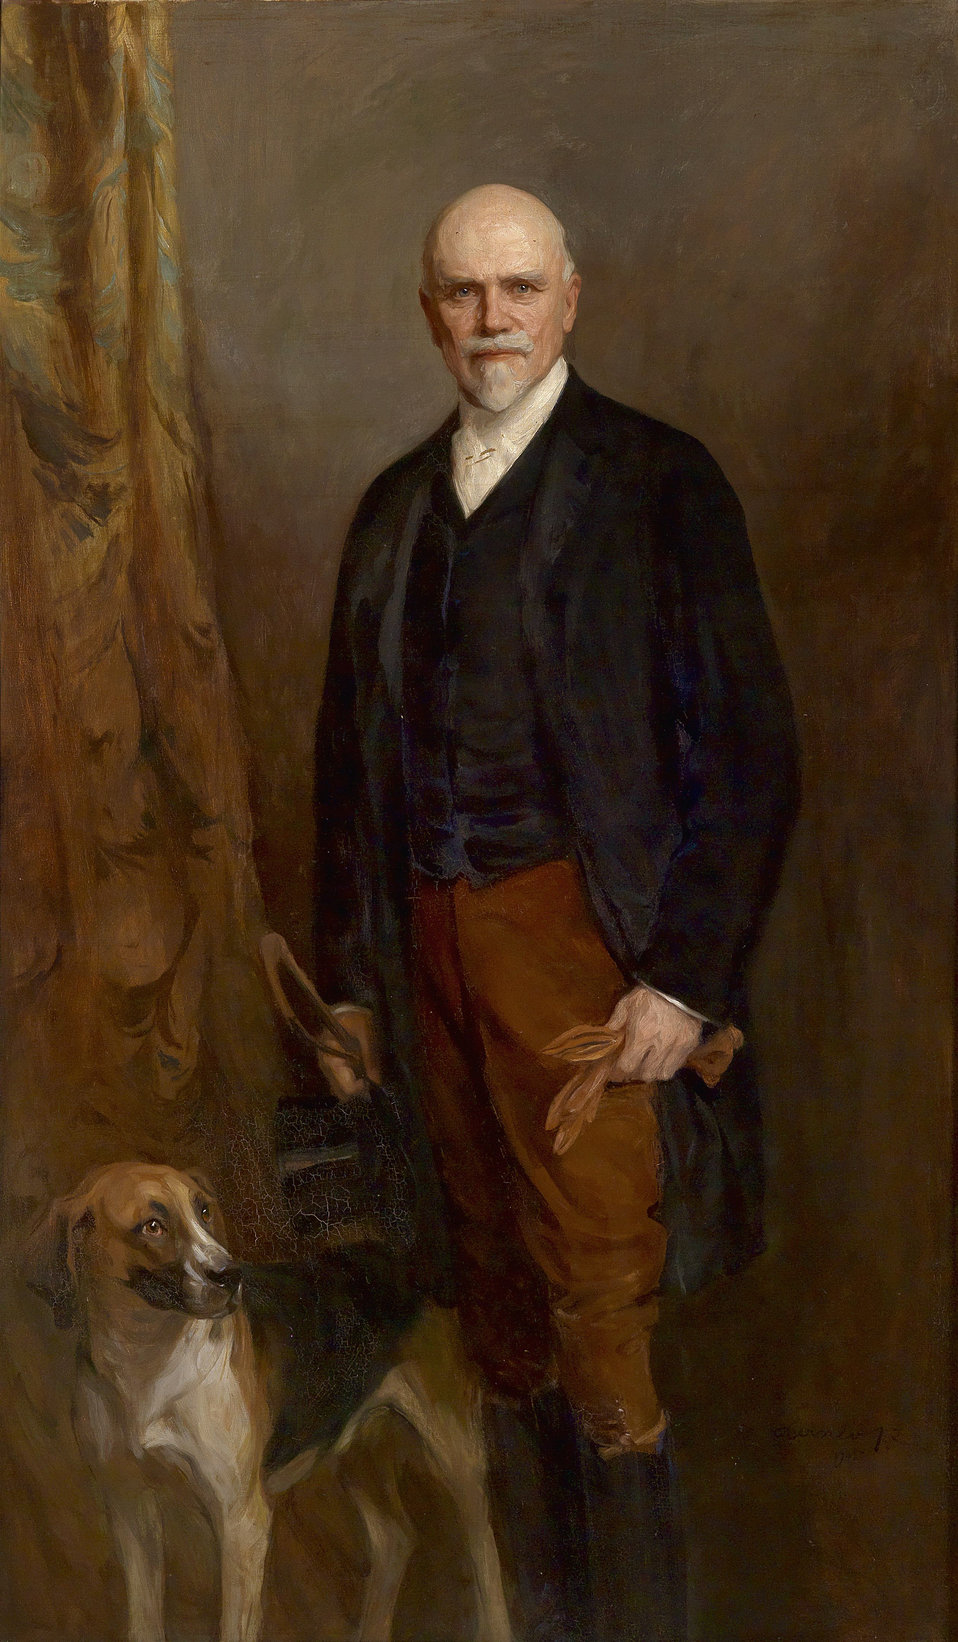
Philipp Alexius de László Bildnis Graf Heinrich Larisch-Moennich 1905